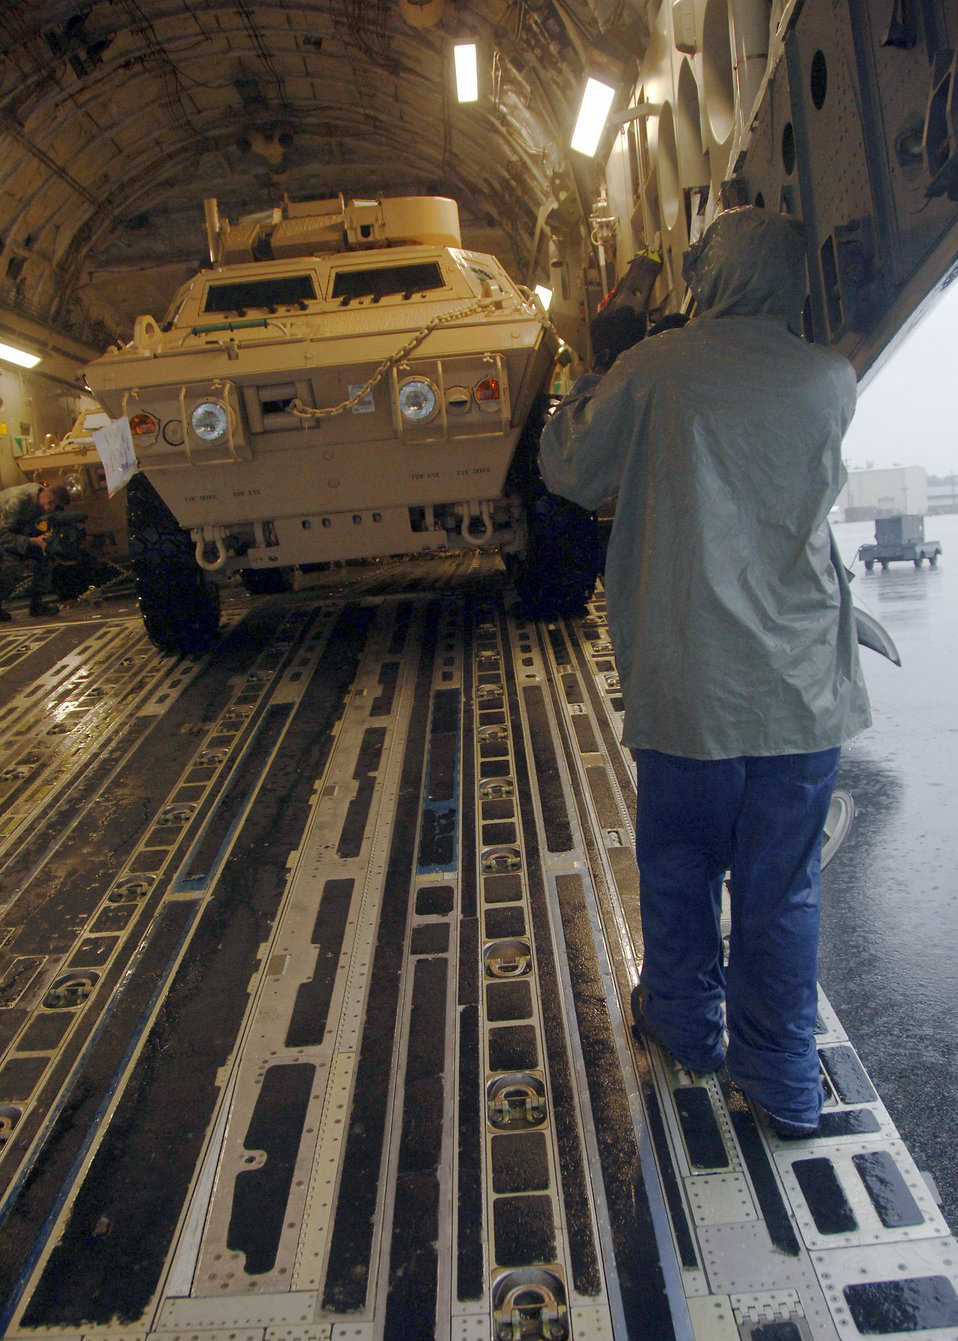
Charleston officials ship vehicles to support warfighters

Corrie Frazier guides an armored security vehicle toward the back of a C-17 on the Charleston AFB flightline Oct. 24. The Armored Security Vehicle is a four-wheel-drive vehicle that provides ballistic protection to warfighters who are using them against various threats. Mr. Frazier is with the 437th Aerial Port Squadron.